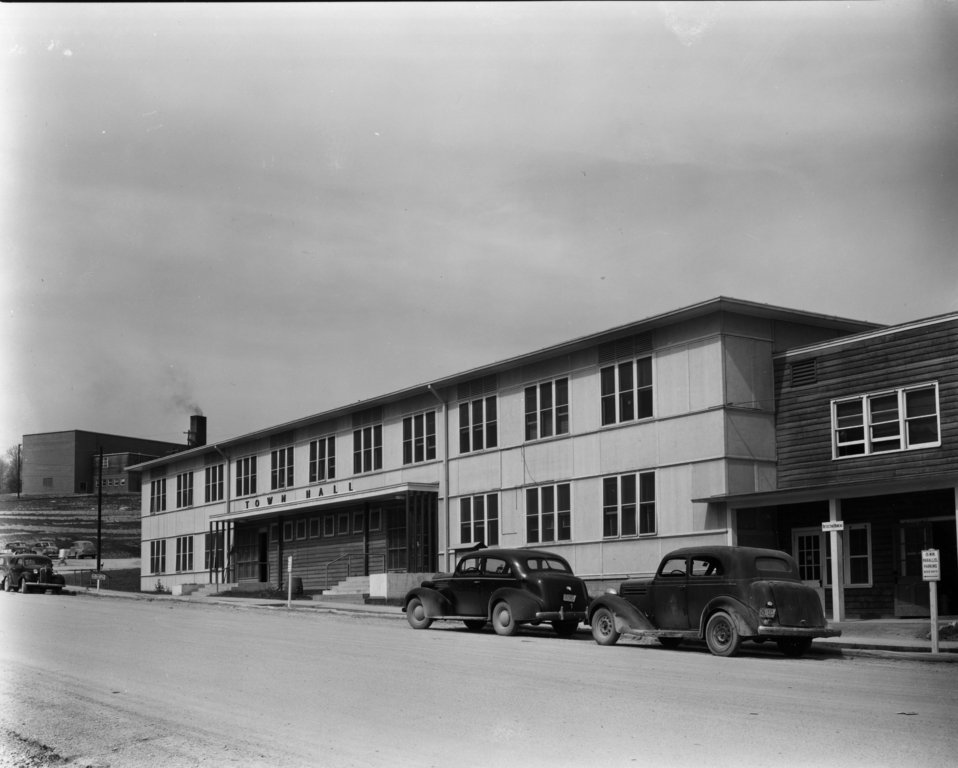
Services at Oak Ridge